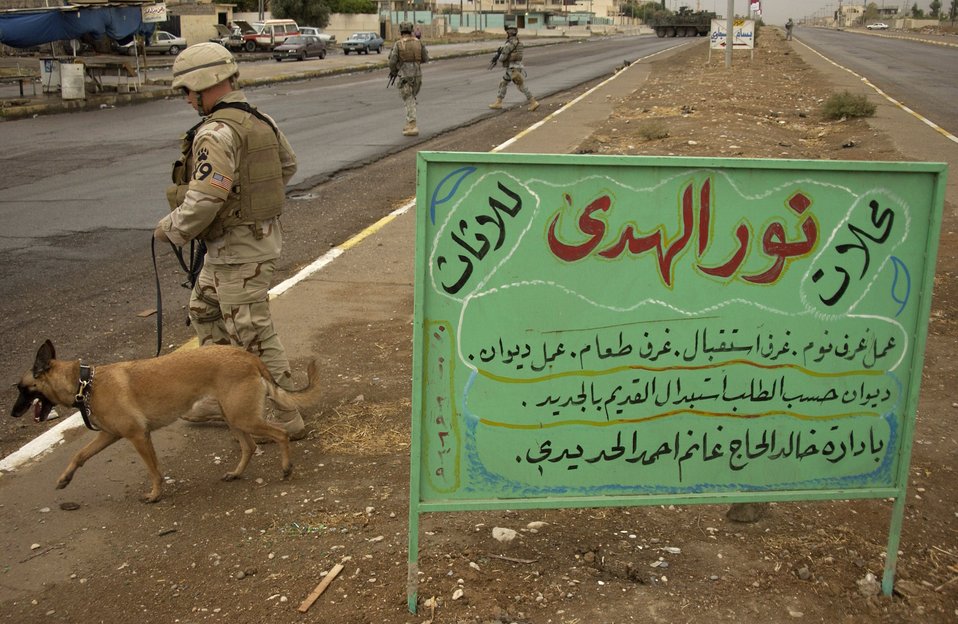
Street patrol

MOSUL, Iraq (AFPN) -- Staff Sgt. Jonathan Geren and his military working dog accompany team members on patrol. Sergeant Geren and his dog are deployed here from the 10th Security Forces Squadron at Colorado Springs, Colo. The security forces career is undergoing a transformation that will affect the total force. These changes will present the opportunity for other Airmen to participate in installation security.